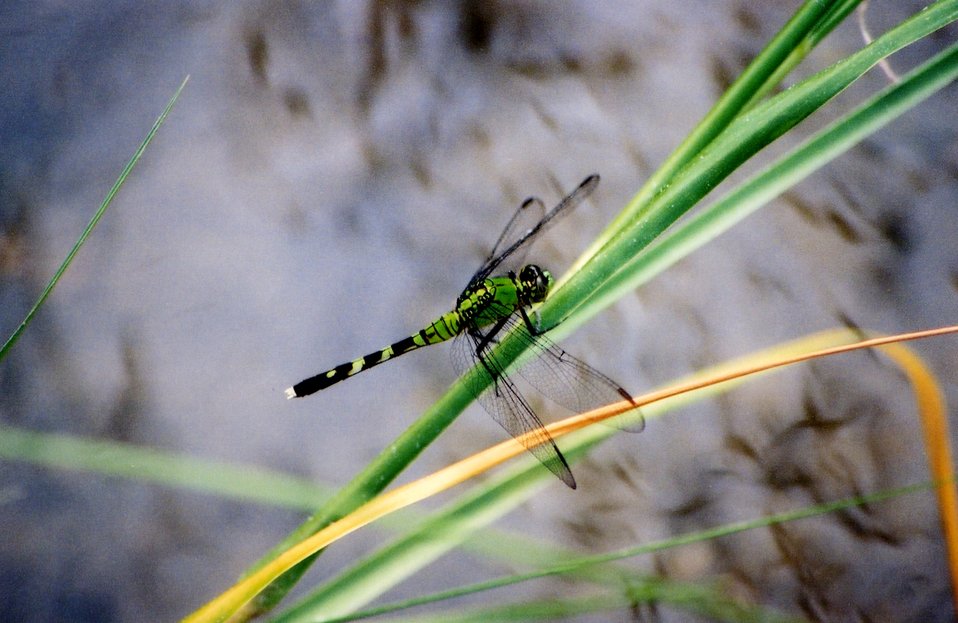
Eastern pondhawk dragonfly - Erythemis simplicicollis.